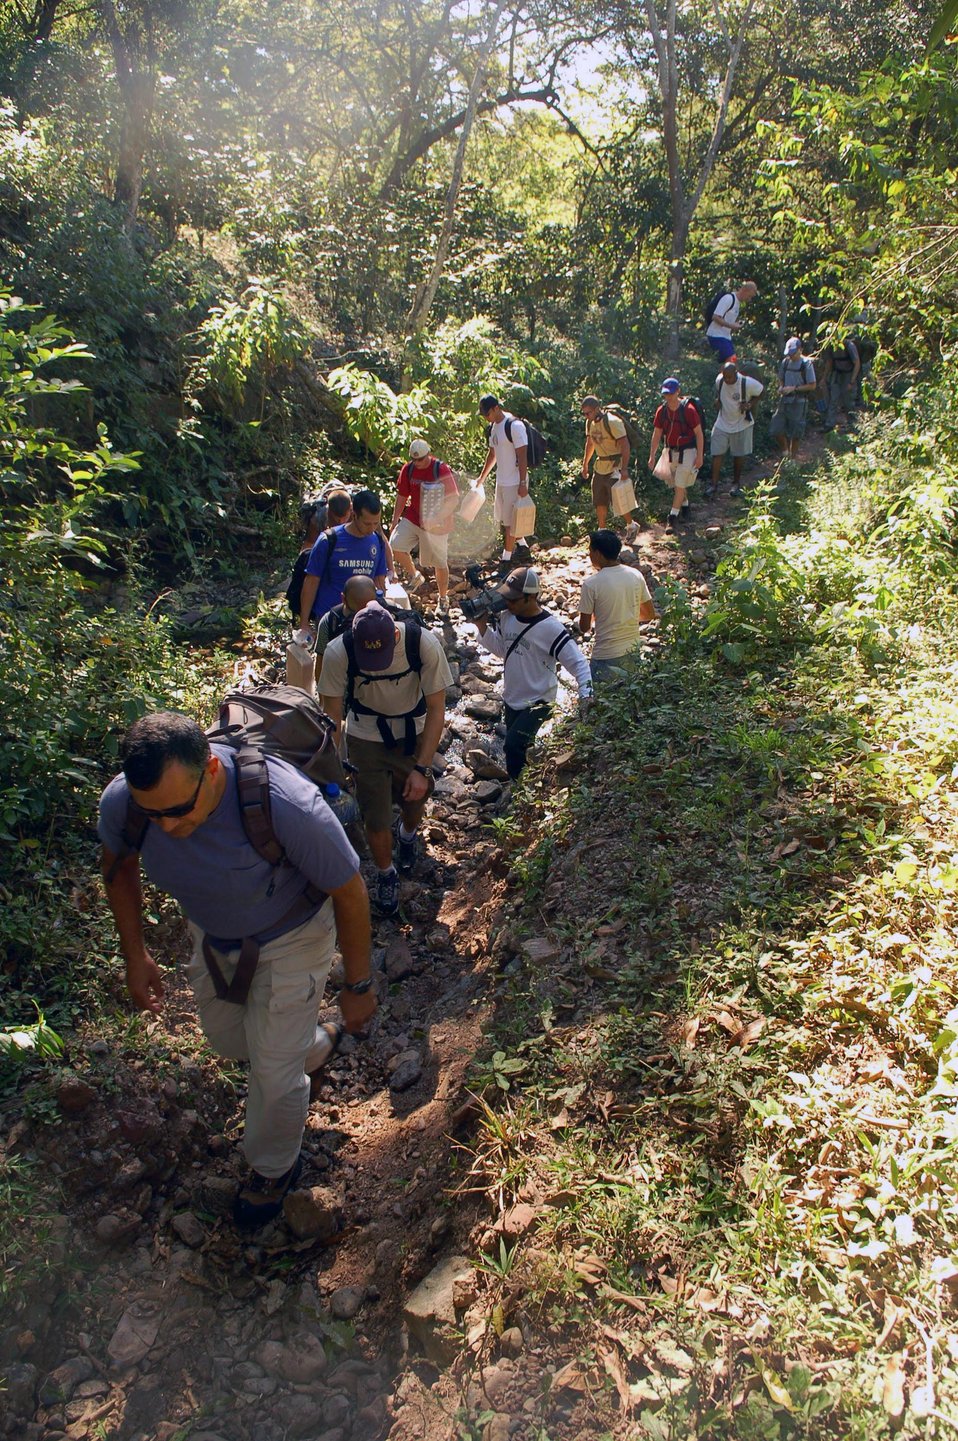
Volunteers deliver food to Honduran mountain village

Servicemembers assigned to Joint Task Force-Bravo cross a stream en route to the village of Capiro to deliver approximately 600 pounds of food Dec. 14 in Honduras. The three-mile hike, sponsored by the JTF-Bravo chapel, was the fourth in a series of five scheduled trips.